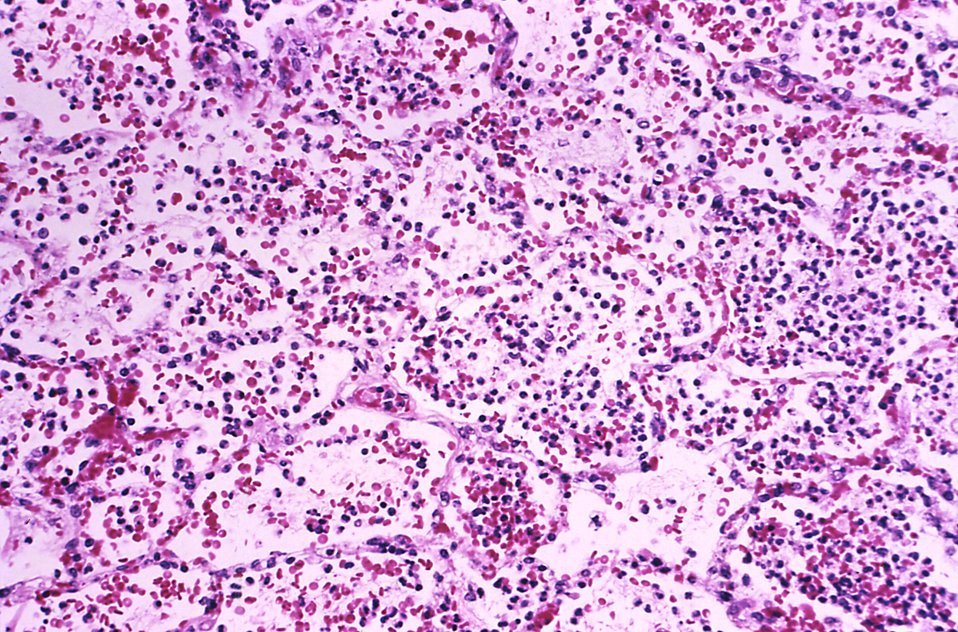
This photomicrograph depicts the histopathologic changes in lung tissue in a case of fatal human plague pneumonia; Mag. 160X.